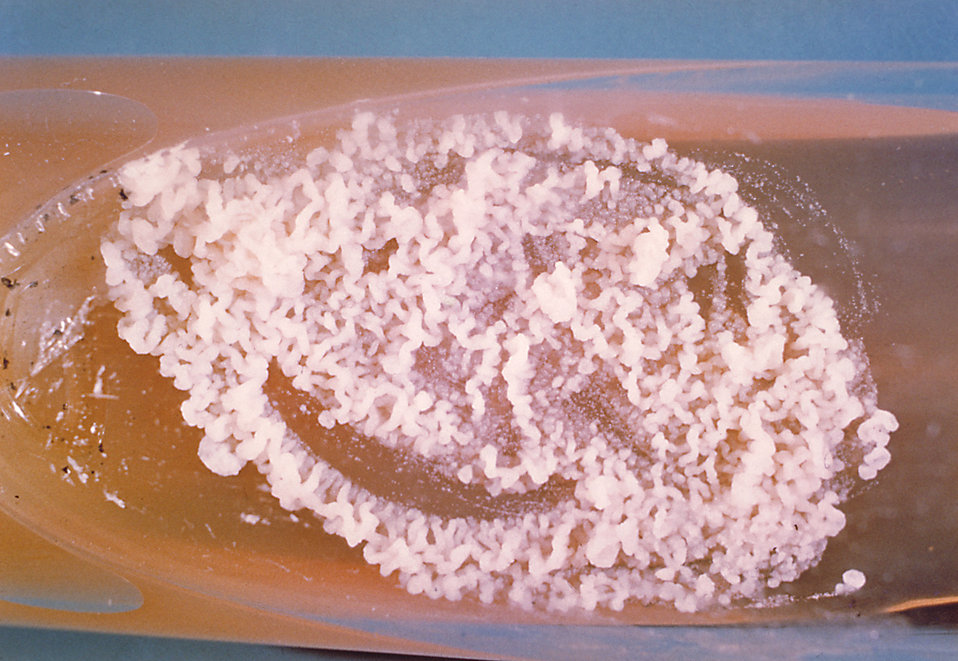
This is a slant culture growing the fungus Paracoccidioides brasiliensis during its yeast phase.